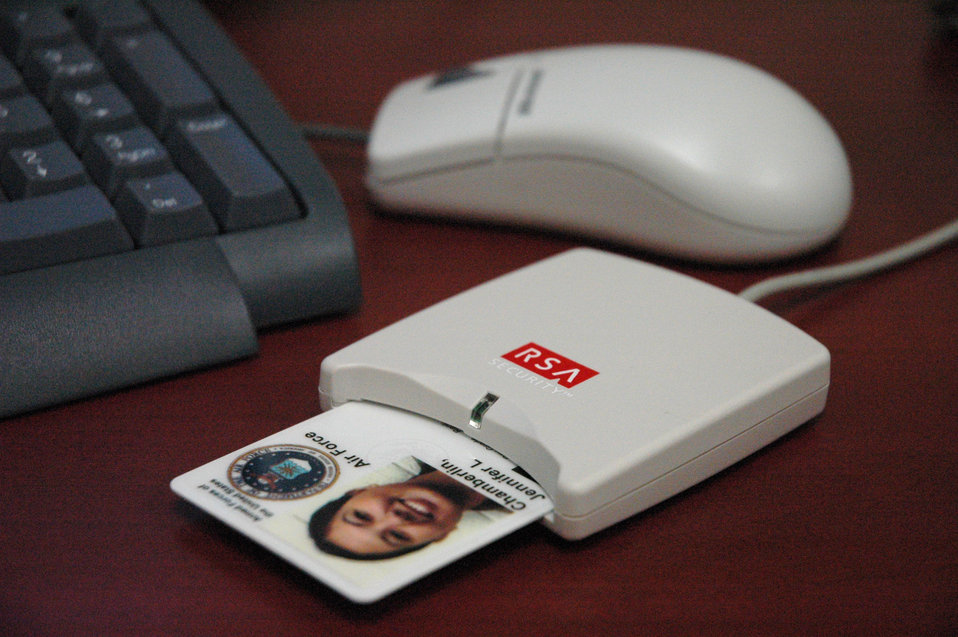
New policy protects Air Force networks

The common access card logon helps Air Force information stay secure. A new policy for Air Force encyrpting and digitally signing e-mails is now in effect to assure the recipient of the sender's identity and reaffirm an e-mail remains unaltered through transmission.